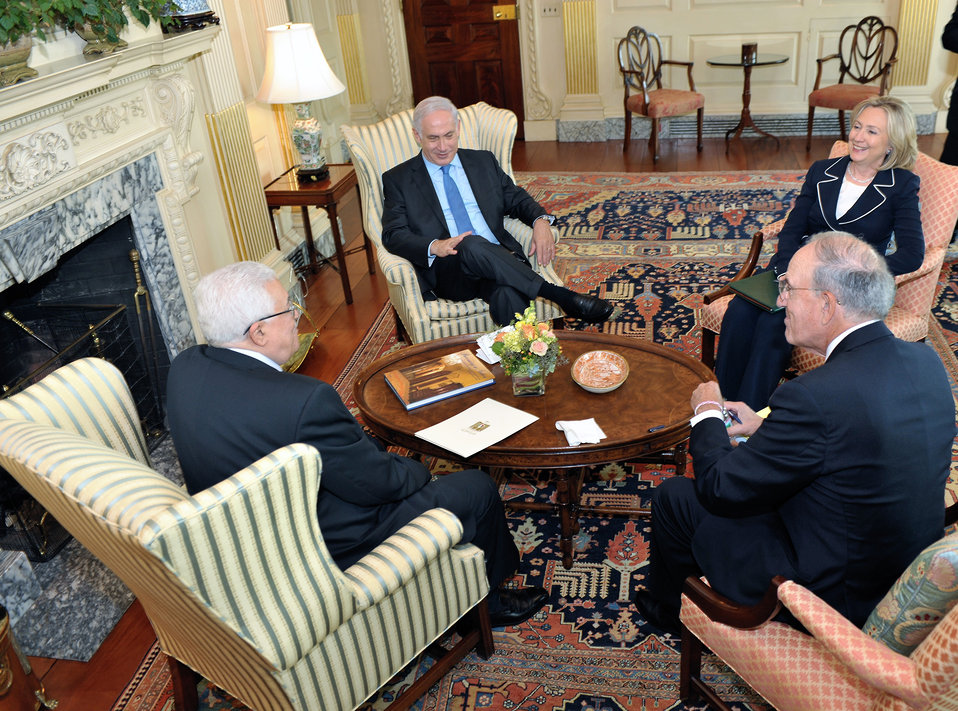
Palestinian President Abbas, Special Envoy Mitchell, Israeli President Netanyahu and Secretary Clinton Share a Laugh

(l-r backs to camera): Palestinian Authority President Mahmoud Abbas, U.S. Special Envoy for Middle East Peace George Mitchell; (l-r facing camera) Israeli Prime Minister Benjamin Netanyahu, and U.S. Secretary of State Hillary Rodham Clinton share a laugh during their meeting at the U.S. Department of State in Washington, D.C., on September 2, 2010.